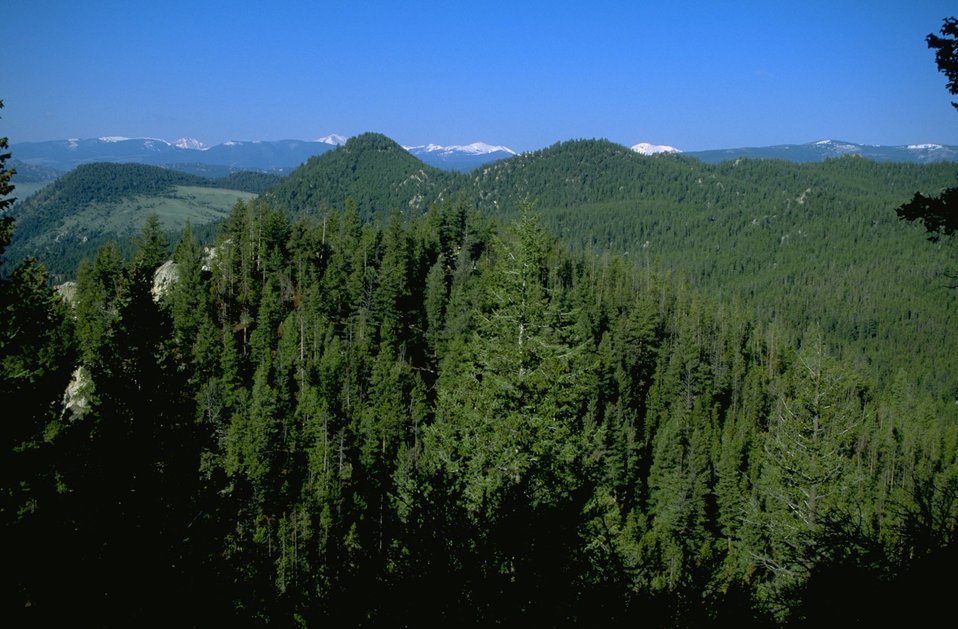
Scenic view high atop the Humbug Spires area with snow-capped mountains in the background